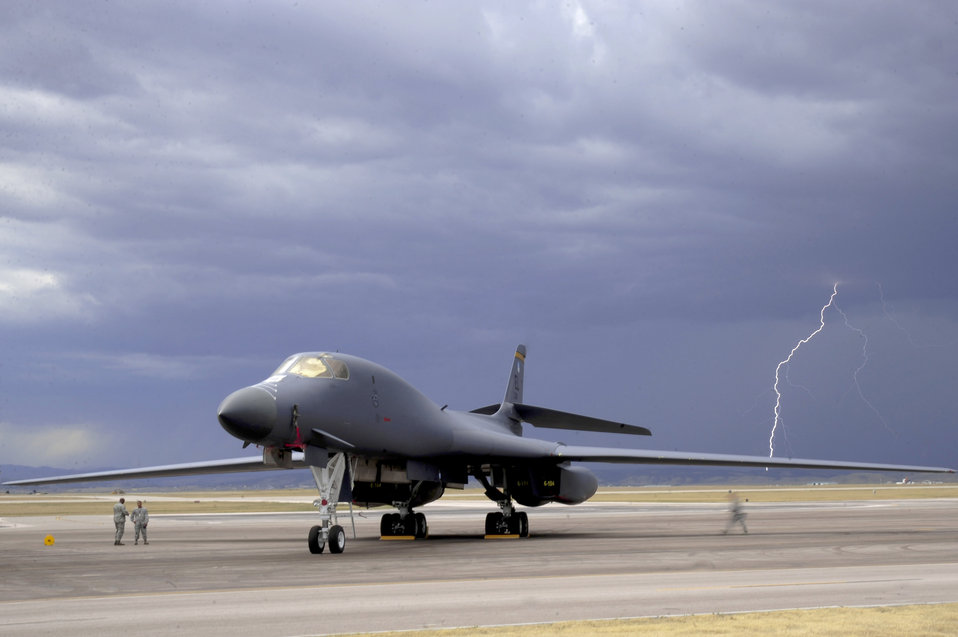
Does it strike twice?

Lightning strikes behind a B-1B Lancer during an evening thunderstorm, Sept. 9, 2010, at Ellsworth Air Force Base, S.D. The 28th Bomb Wing maintains a fleet of 28 B-1s.